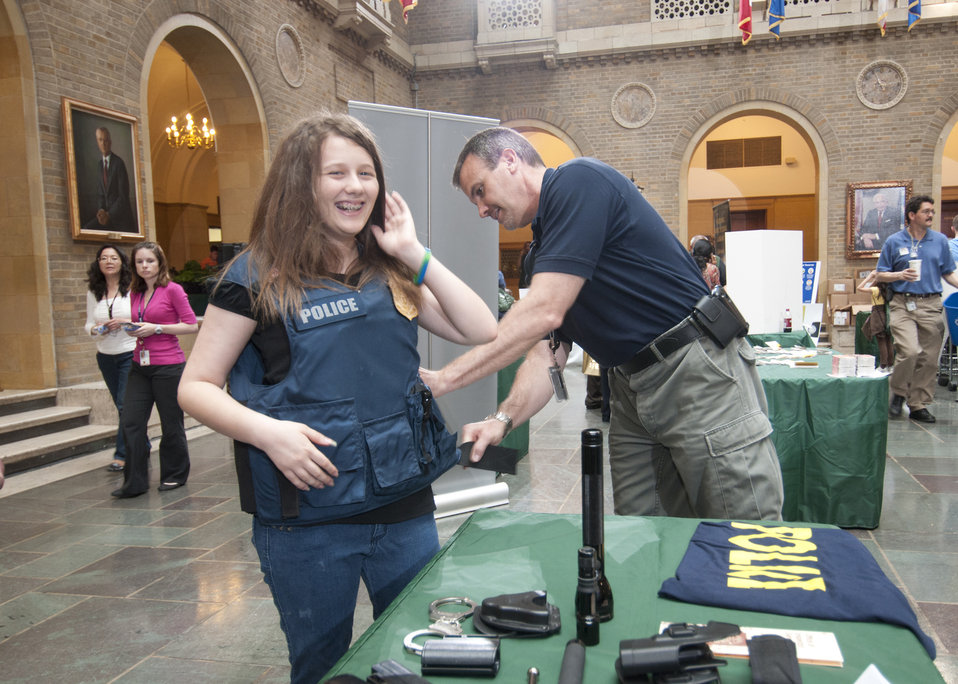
The U. S. Department of Agriculture (USDA) held its annual “Take Your Child to Work Day” on the patio of the Whitten Building, in Washington, DC, on Thursday, April 28, 2011. The program is designed to introduce young people to USDA’s wide range of responsibilities and services. Sherry Wise tries on a bulletproof vest at the Federal Protection Service exhibit at Agriculture’s “Take Your Child to Work Day” event.